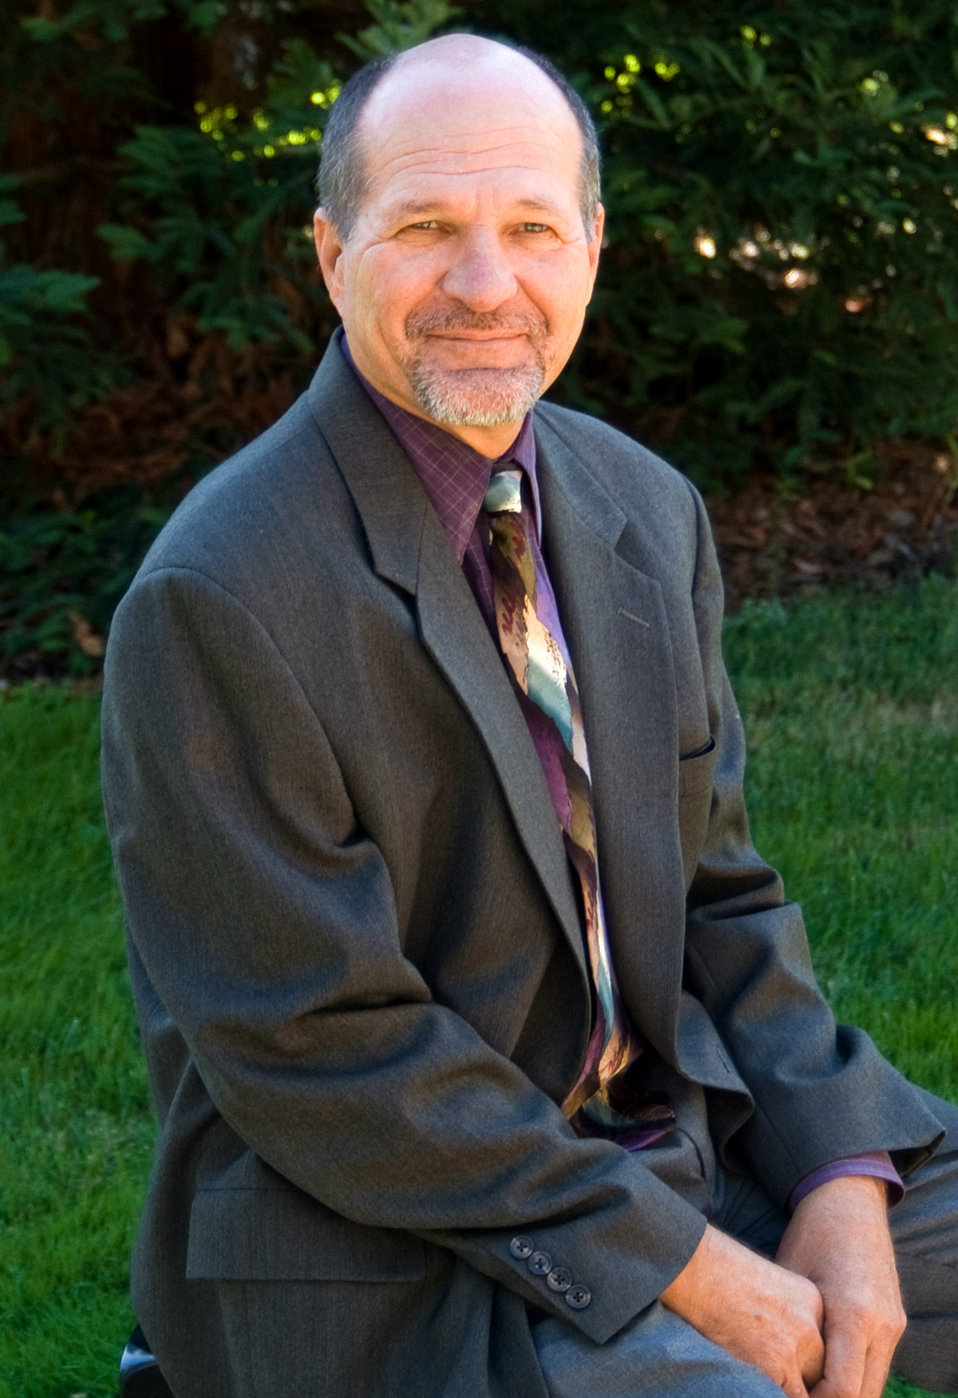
Ren Lohoefener served in the Army and is now the Regional Director of the Pacific Southwest Region.